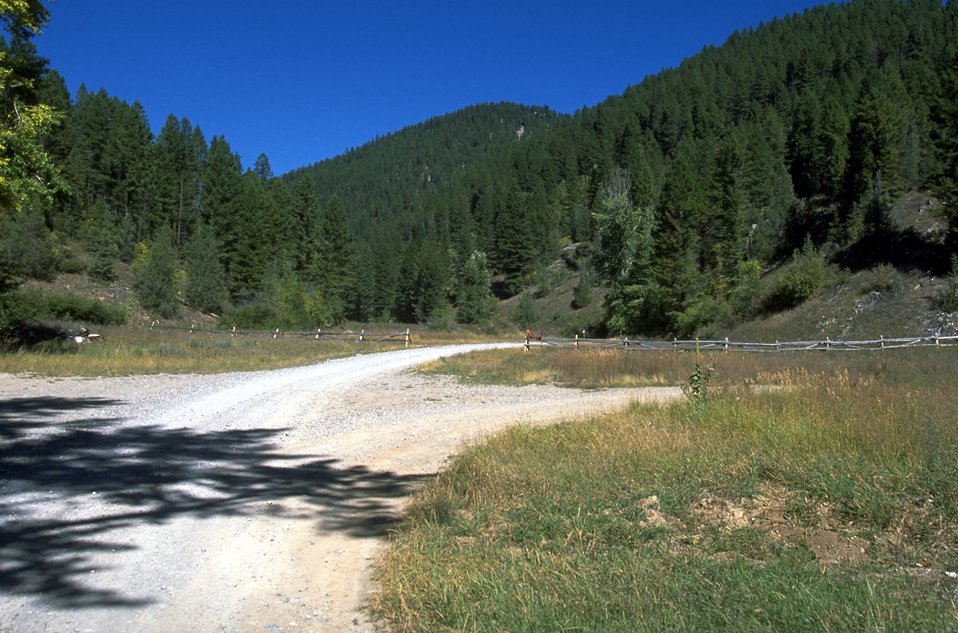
Bear Gulch-Deep Creek Junction